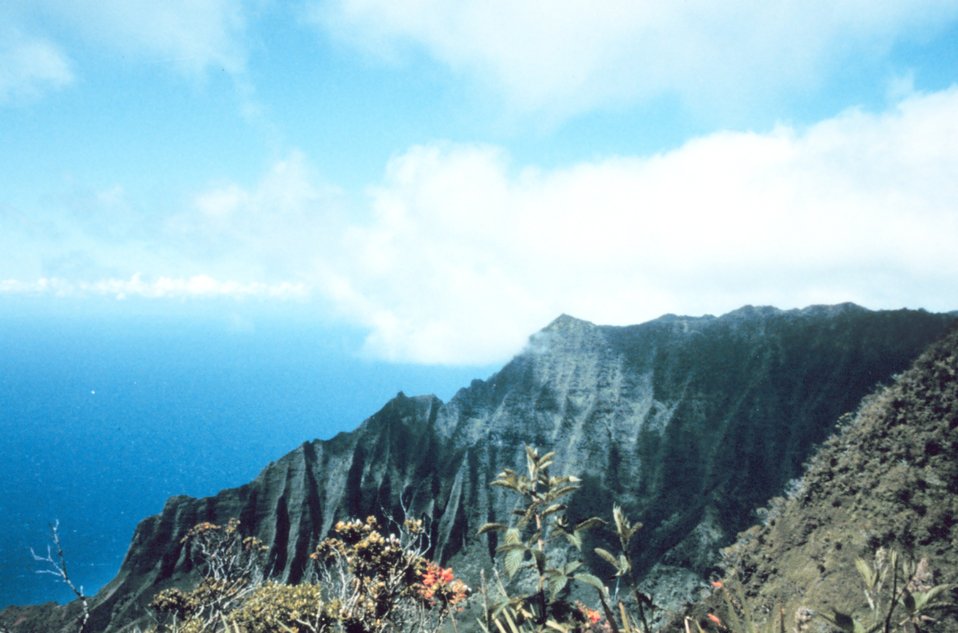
A knife-edge ridge trailing down to the sea.